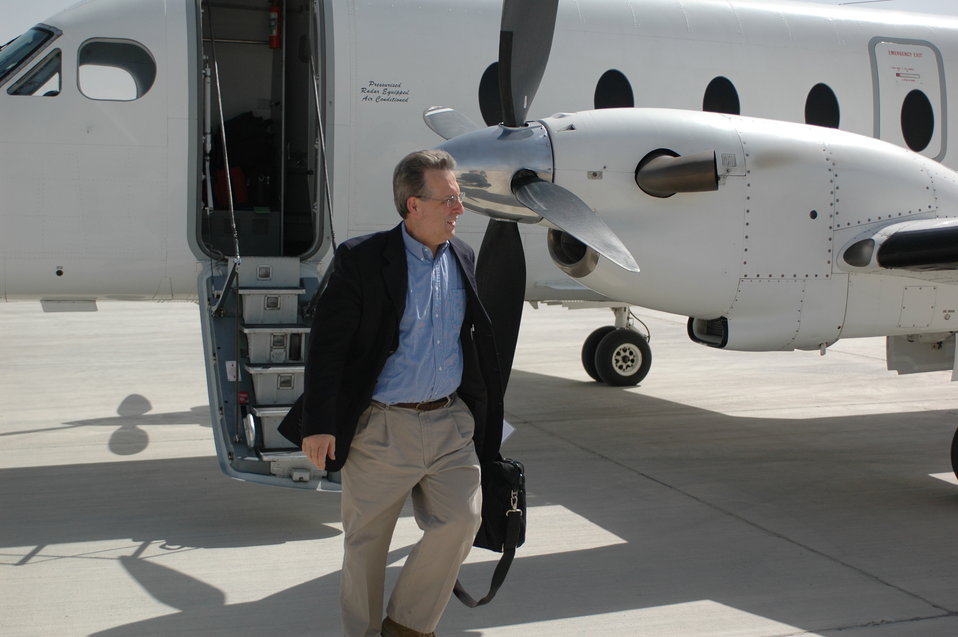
Dr Shah Visits Kandahar April 9, 2010